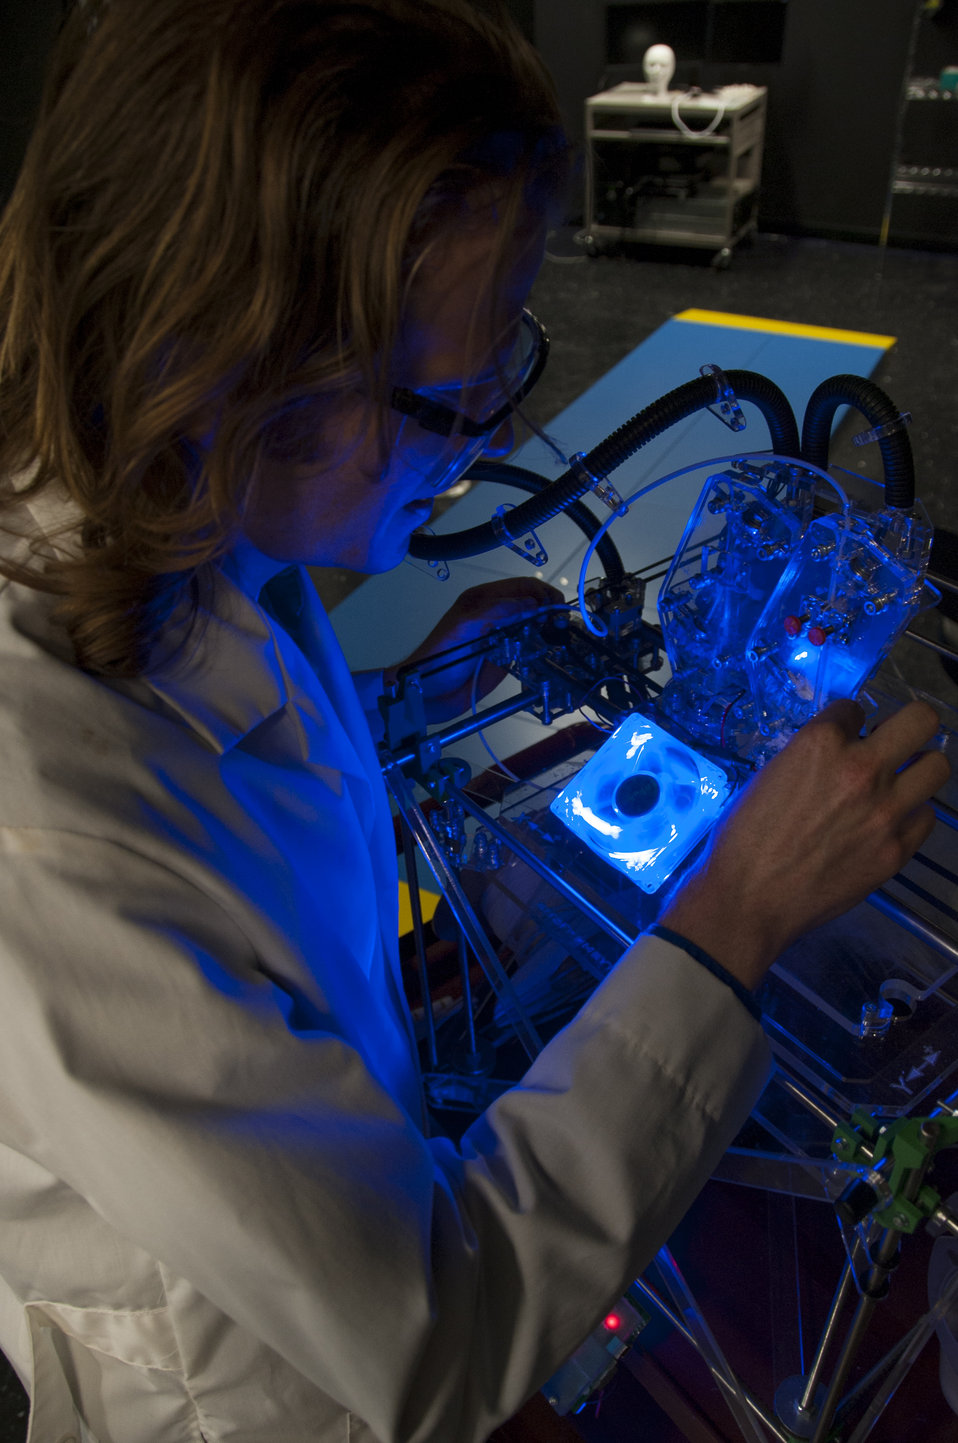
3-D Printing at FDA (8266)

Research engineer James Coburn uses this 3-D printer in his work at FDA. 3-D printing—the process of making a three-dimensional solid object of virtually any shape from a digital model—is spurring innovation in manufacturing, dramatically reducing the time required to design new products and allowing designs to be built that were not possible before. At FDA, we’re using it to expand both our research and our review of new and innovative medical products. To learn more, read this FDA Voice blog post:

• FDA Goes 3-D